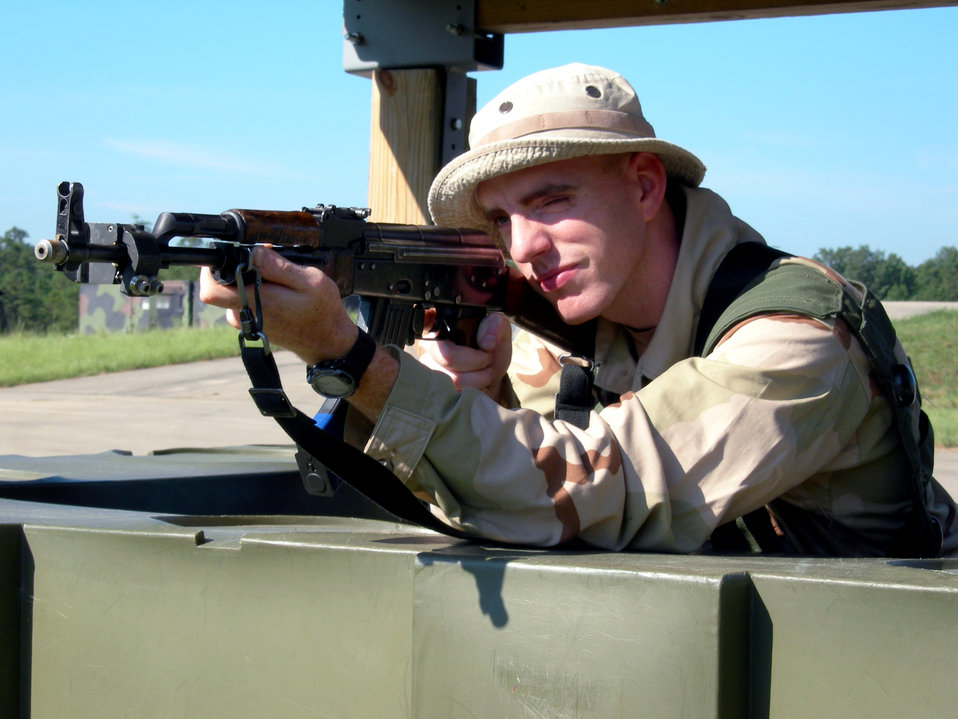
Airmen hone combat skills

Senior Airman David Branch portrays a private in a foreign national army during an Exercise Eagle Flag 06-3 scenario at Naval Air Engineering Station Lakehurst, N.J., on July 14. The exercise tests Airmen from various career fields on their expeditionary combat support skills. Airman Branch is assigned to the 52nd Combat Communications Squadron at Robins Air Force Base, Ga.